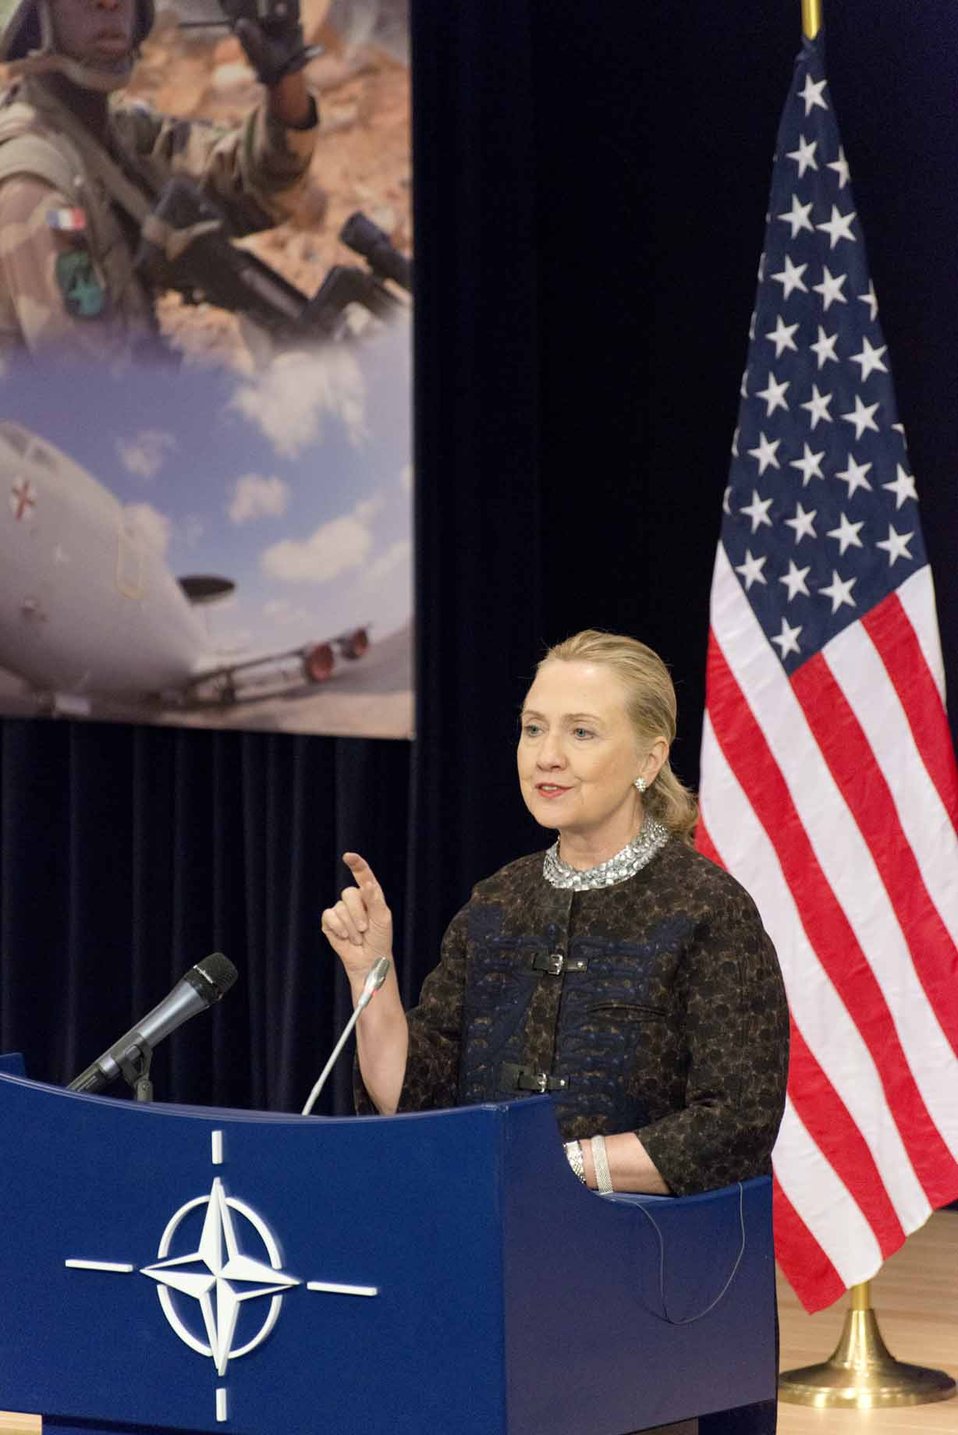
Secretary Clinton Addresses Reporters at NATO Headquarters

U.S. Secretary of State Hillary Rodham Clinton addresses reporters at NATO Headquarters in Brussels, Belgium, December 5, 2012.